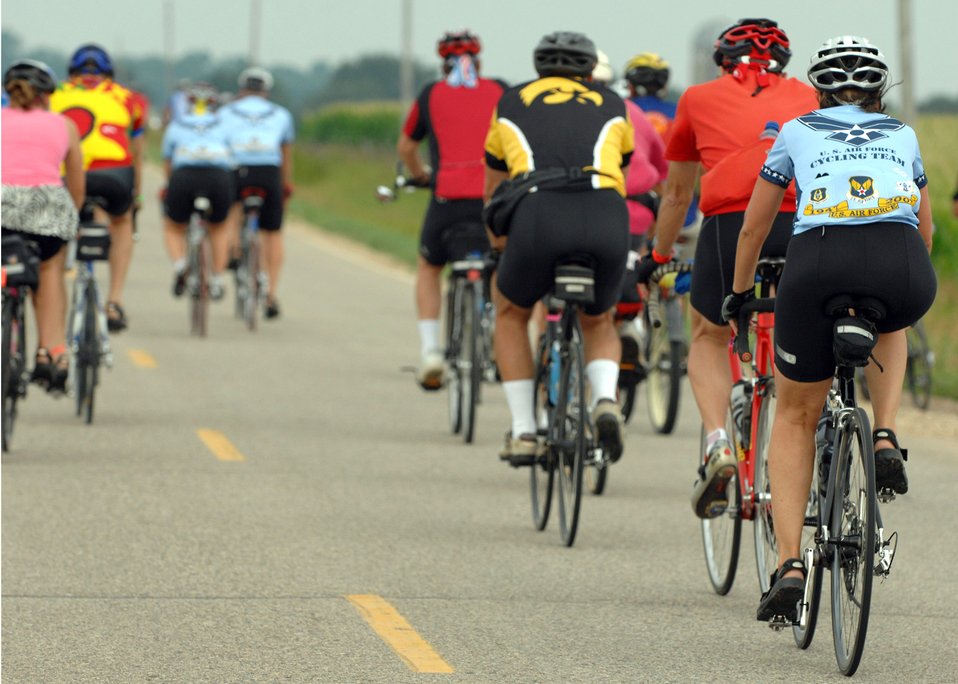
Airmen cycle across Iowa

A member of the U.S. Air Force Cycling Team rides her bicycle from Spencer to Humboldt, Iowa, along with other participants July 23 during the third day of the Register's Annual Great Bike Ride Across Iowa, known as RAGBRAI, a cycling event sponsored by the Des Moines Register newspaper. This is the 13th year the Air Force Cycling Team has participated in the RAGBRAI to support Air Force recruiting.